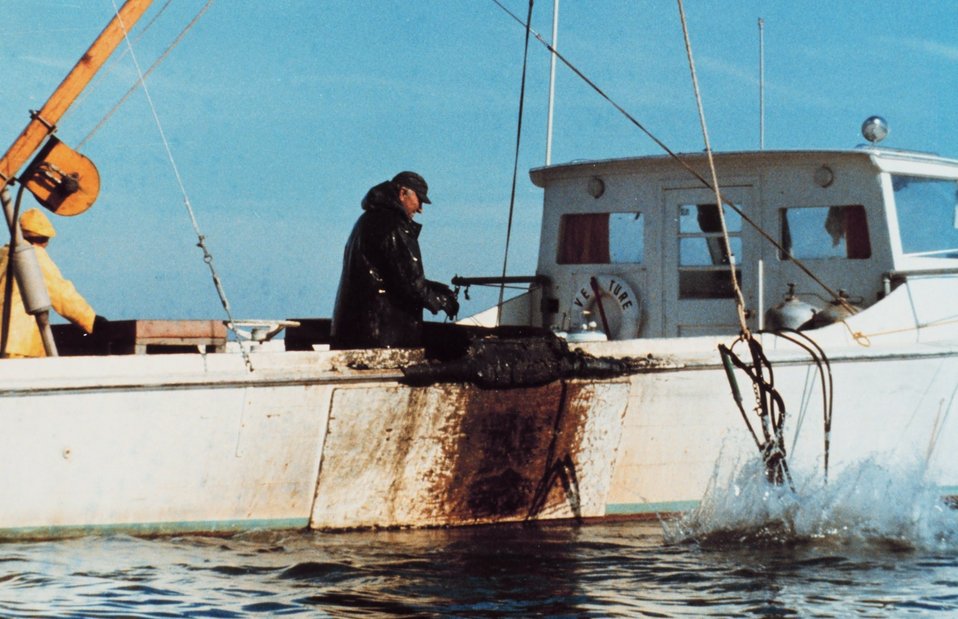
A Chesapeake waterman plying his trade on a cold winter morning.